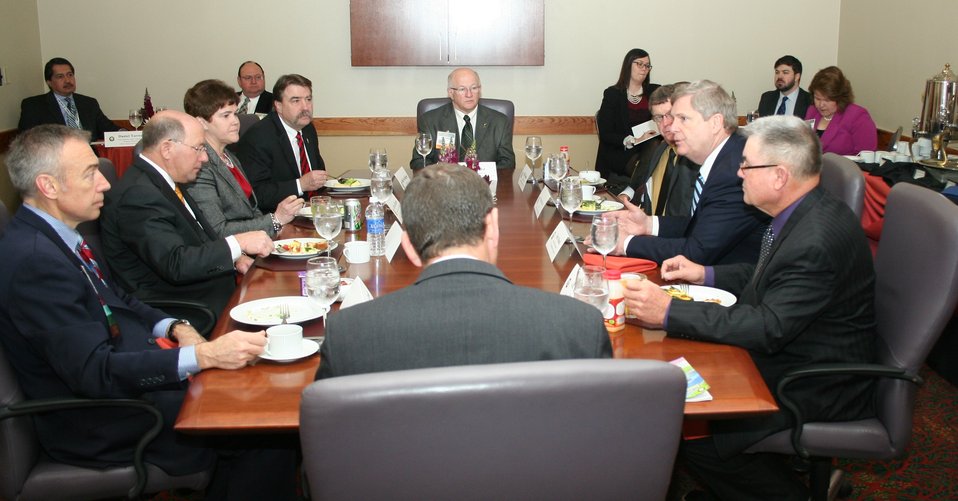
Agriculture Secretary Tom Vilsack and Agriculture Deputy Secretary Krysta Harden visit with presidents and CEOs of major commodity associations about the Farm Bill, trade, regulations and other topics prior to Secretary Vilsack’s keynote address at the Commodity Classic in San Antonio, TX on Friday, Feb. 28, 2014.USDA photo by Melissa Blair.